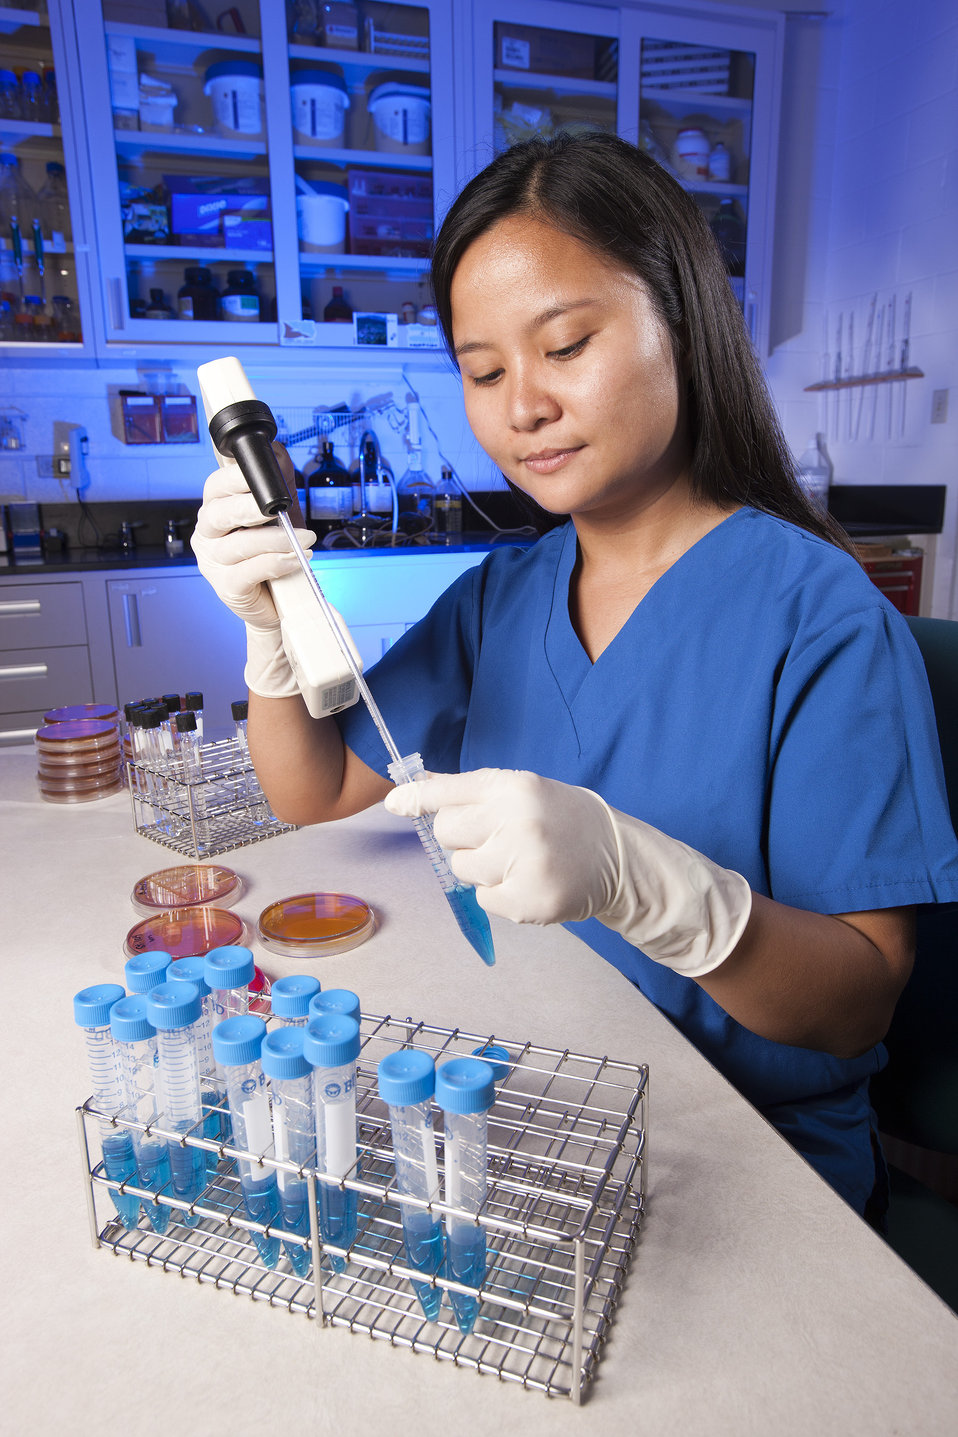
U.S. Department of Agriculture (USDA) Agriculture Research Service (ARS) graduate student Jacquelyn Escarcha inserts samples developed from cattle fecal waste into a solution that detects Salmonella on Dec. 6, 2002.